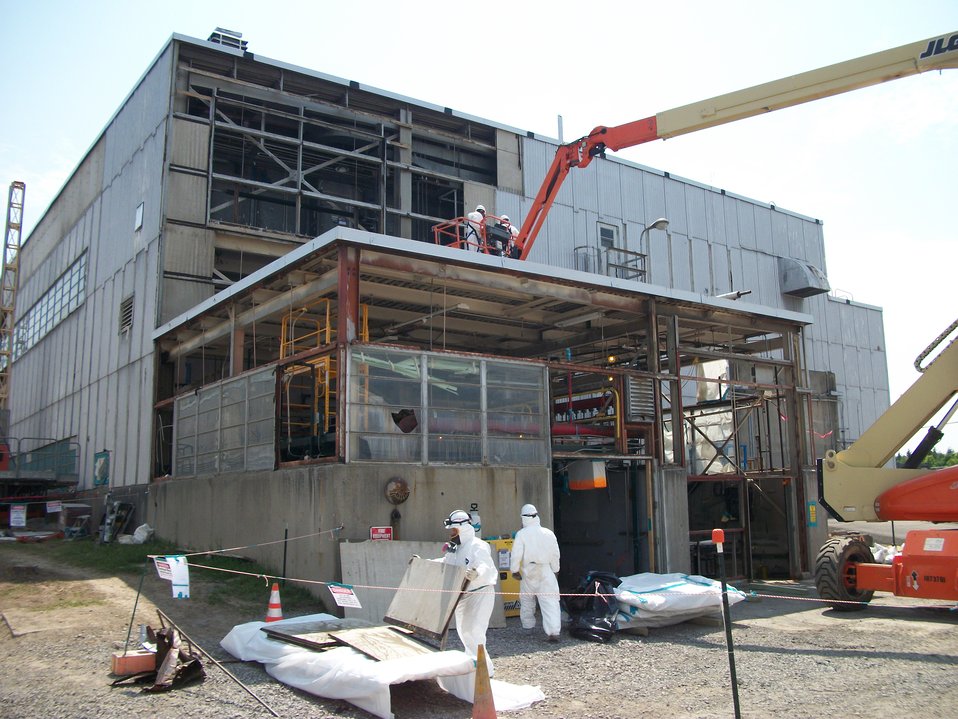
Recovery Act Keeps SPRU on Track for Closure in 2011

Workers prepare the G2 Building, which housed laboratories, hot cells, separations process testing equipment, and a tunnel system, for demolition.